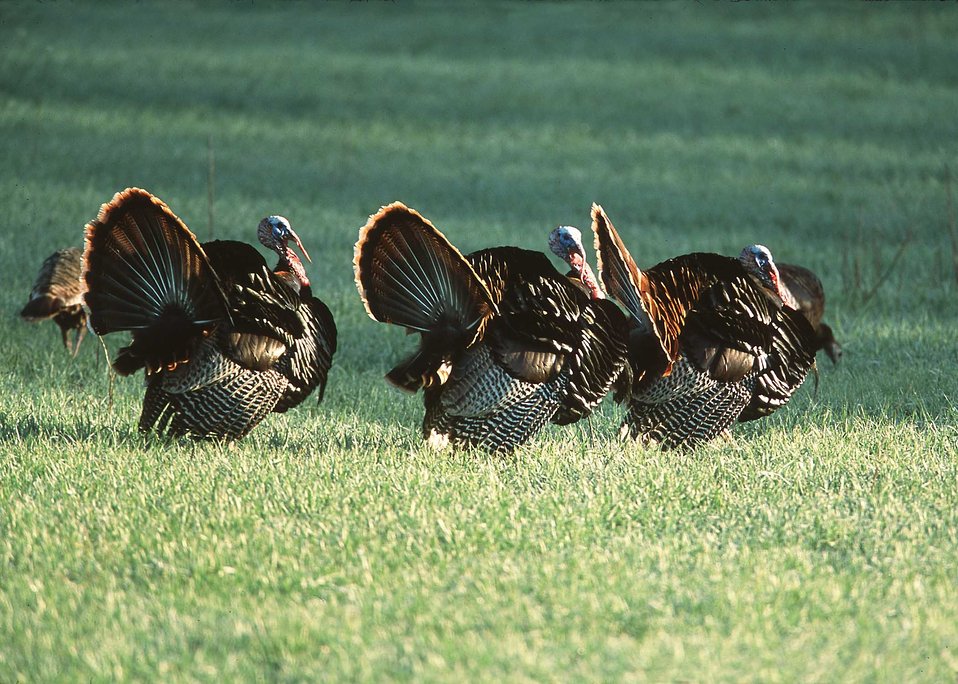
Male turkeys displaying at the edge of a wheat field in Manhattan, Kansas.